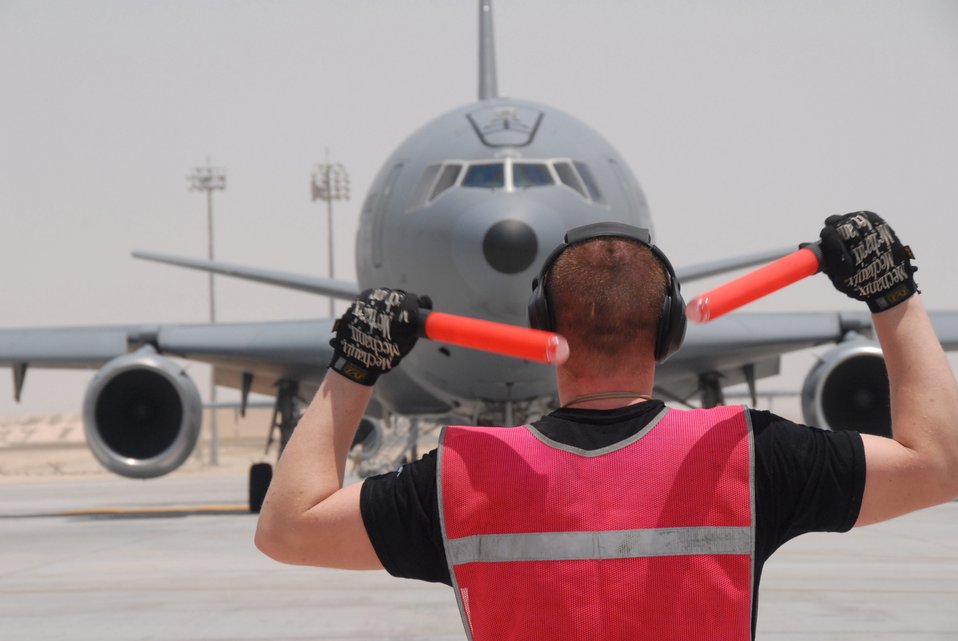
Airpower summary for May 24, 2007

Staff Sgt. Joshua Hill marshals a KC-10 Extender at a base in Southwest Asia. Tankers delivered 2.6 million pounds of fuel to coalition aircraft around the area of responsibility May 23. Sergeant Hill is a crew chief with the 380th Expeditionary Aircraft Maintenance Squadron.